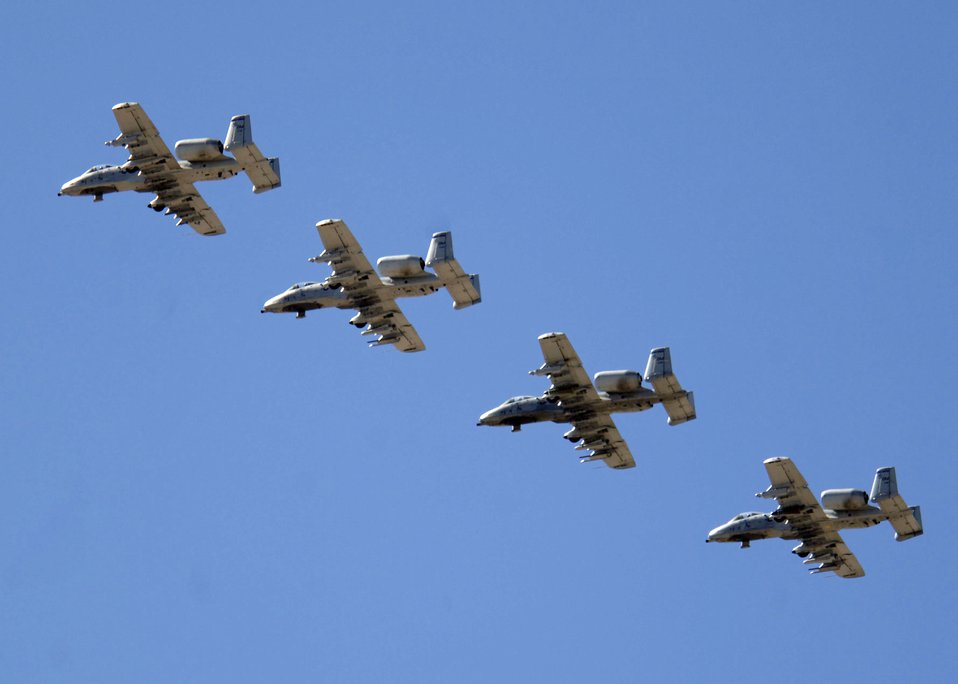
Hawgsmoke 2006

Four A-10 Thunderbolt IIs fly into Davis-Monthan Air Force Base, Ariz., Wednesday, March 22, 2006, to kick off the beginning of